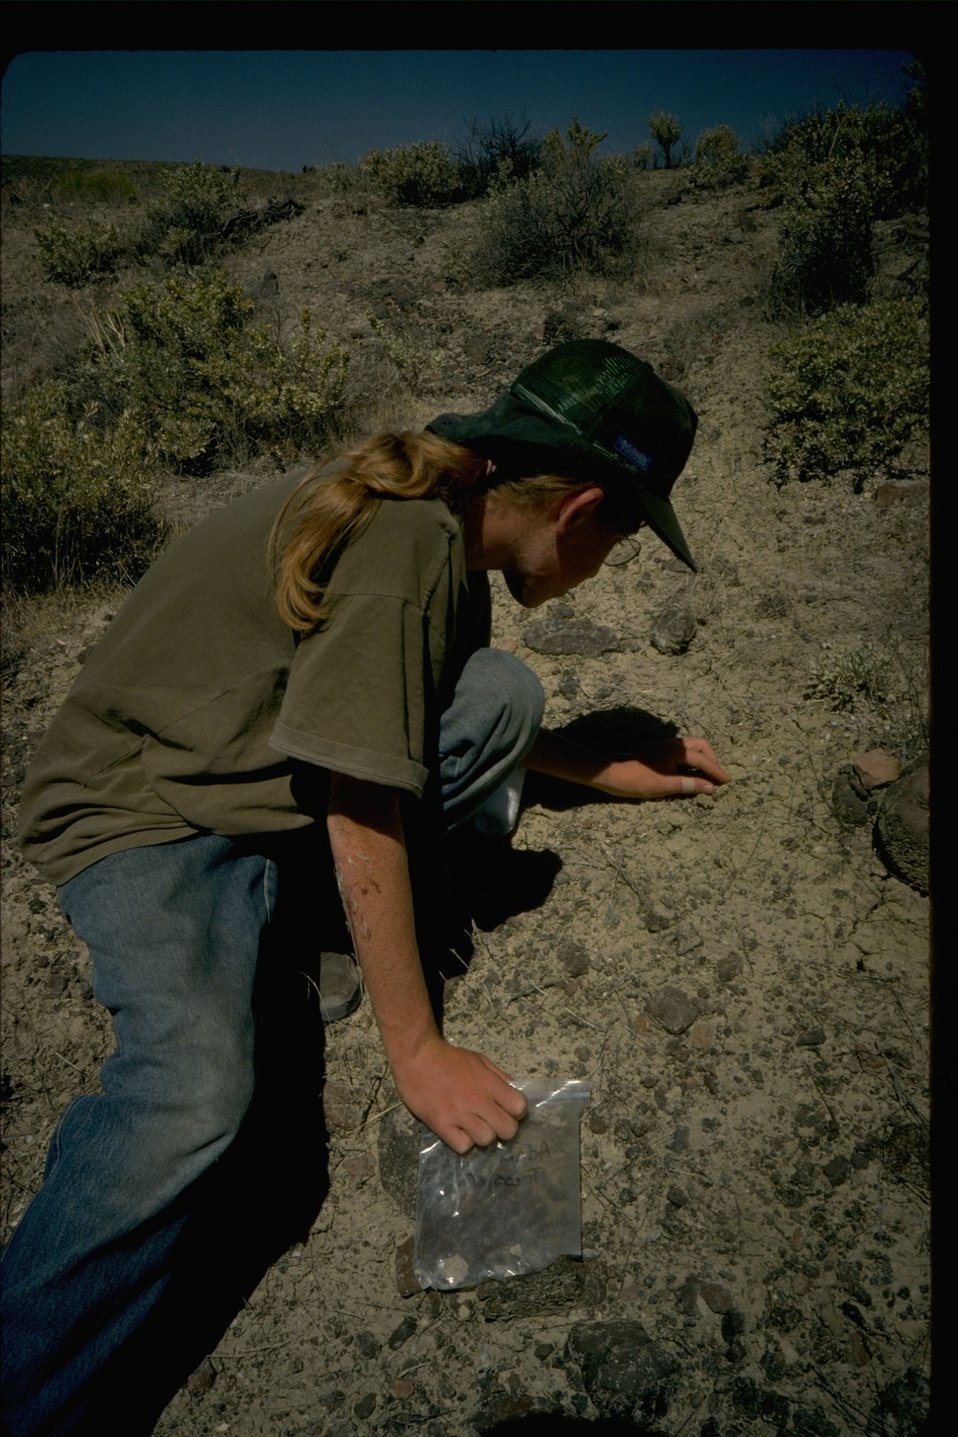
Archeologist working at an archeologist excavation site.